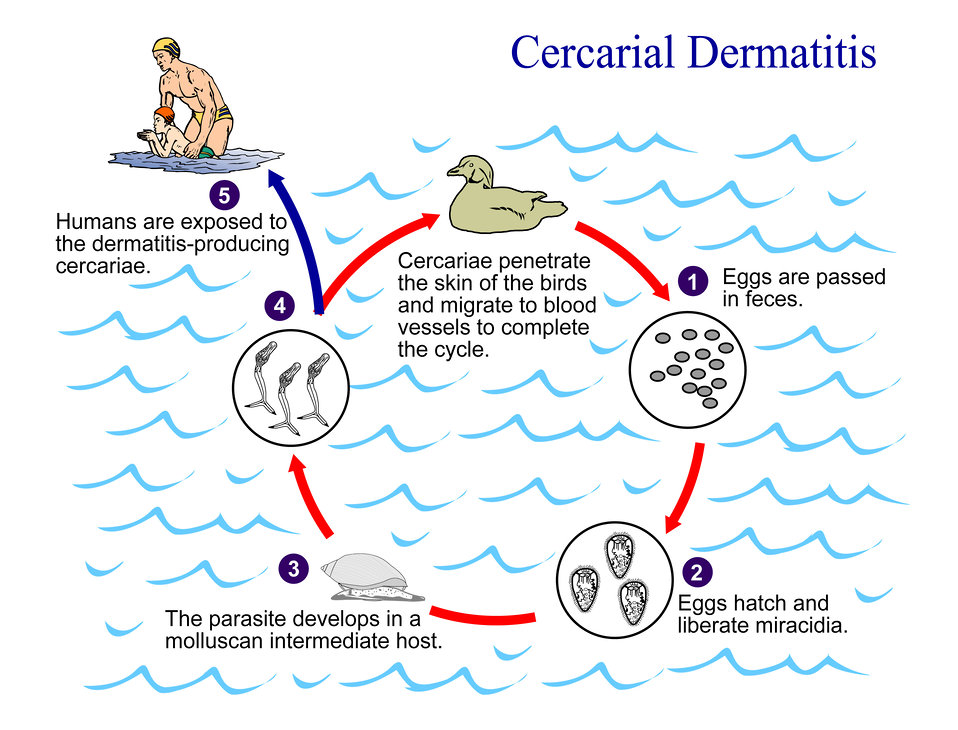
An illustration of the life cycle of the parasite that causes cercarial dermatitis.